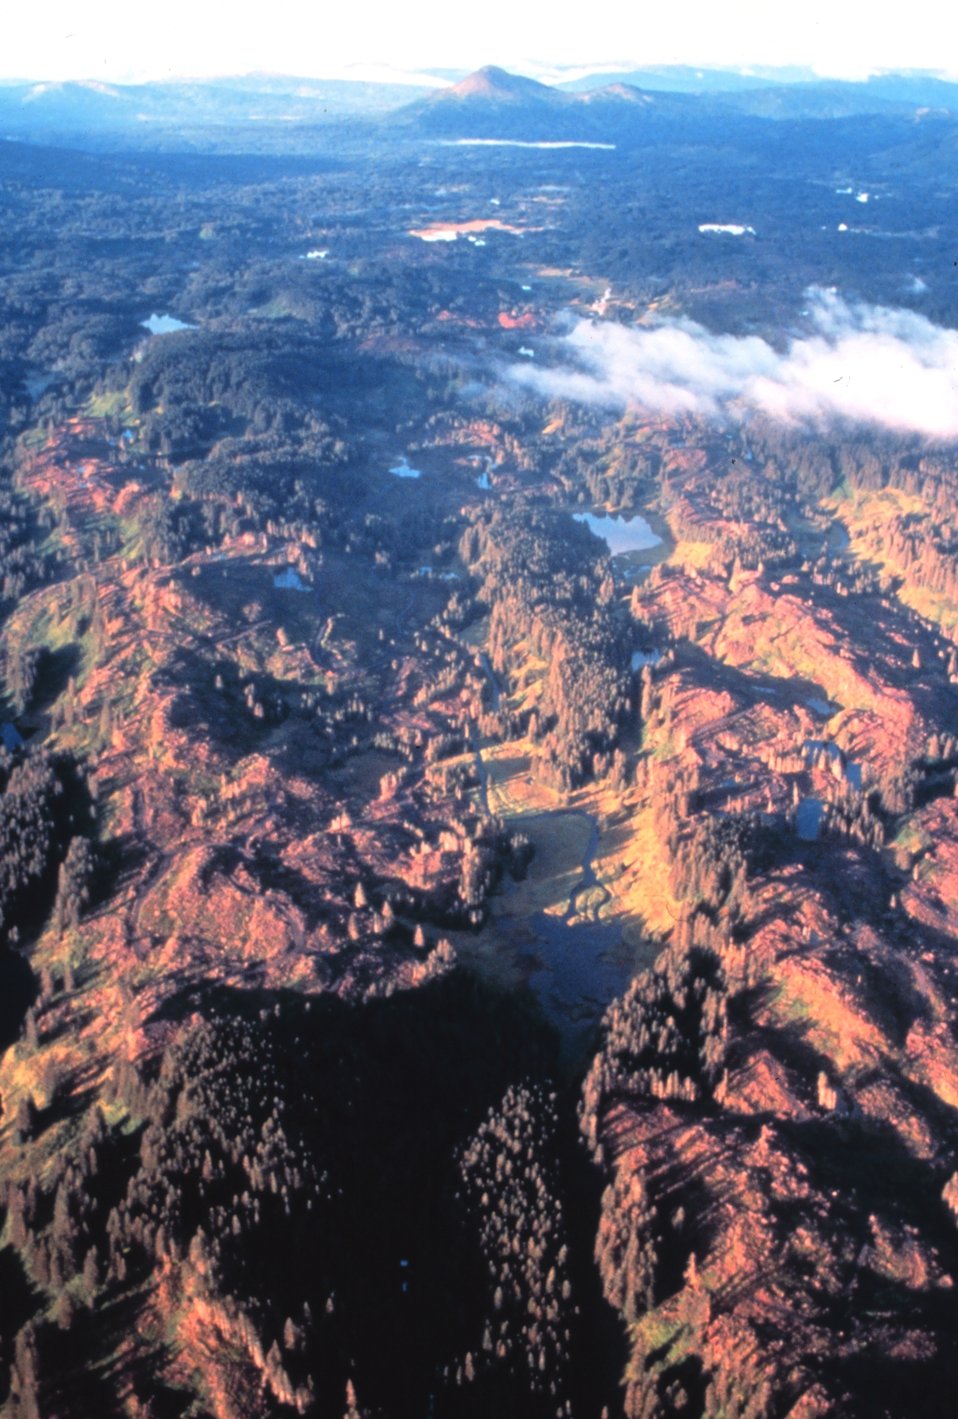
Rugged topography of southern Alaska